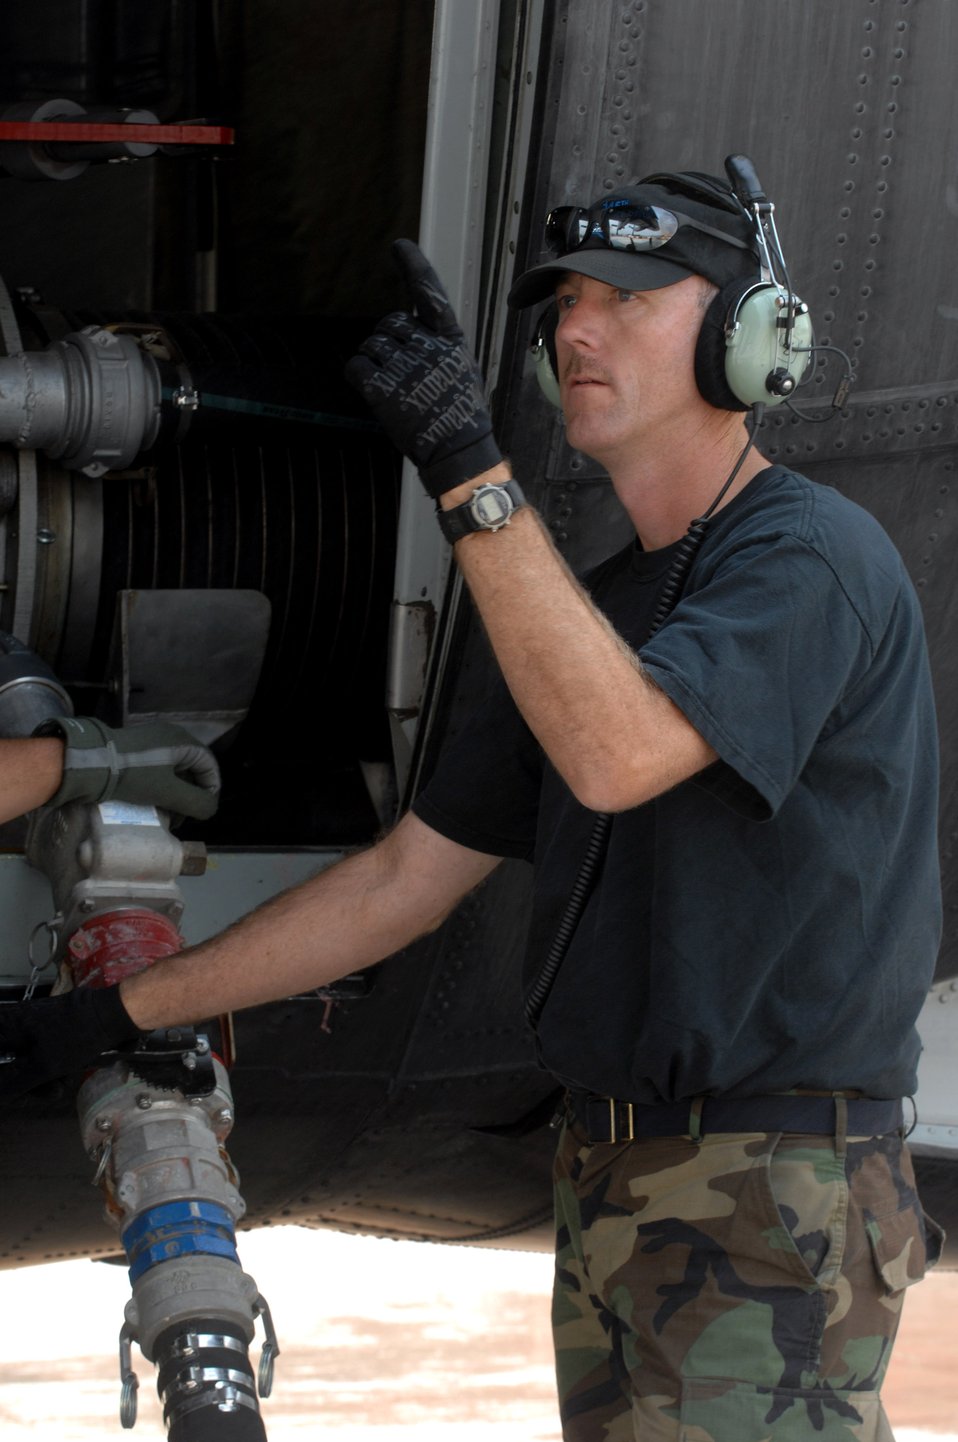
Guard, Reserve aid in California firefighting efforts

Master Sgt. Mitch Lefler gives the OK to fill the Module Air Fire Fighting System with fire retardant on a C-130 Hercules during a refueling stop Oct. 25 at Channel Islands Air National Guard Base, Calif. Air Force Reserve Command and Air National Guard Airmen are participating in the Southern California firefighting effort. Sergeant Lefler is assigned to the 145th Maintenance Squadron from Charlotte, N.C.